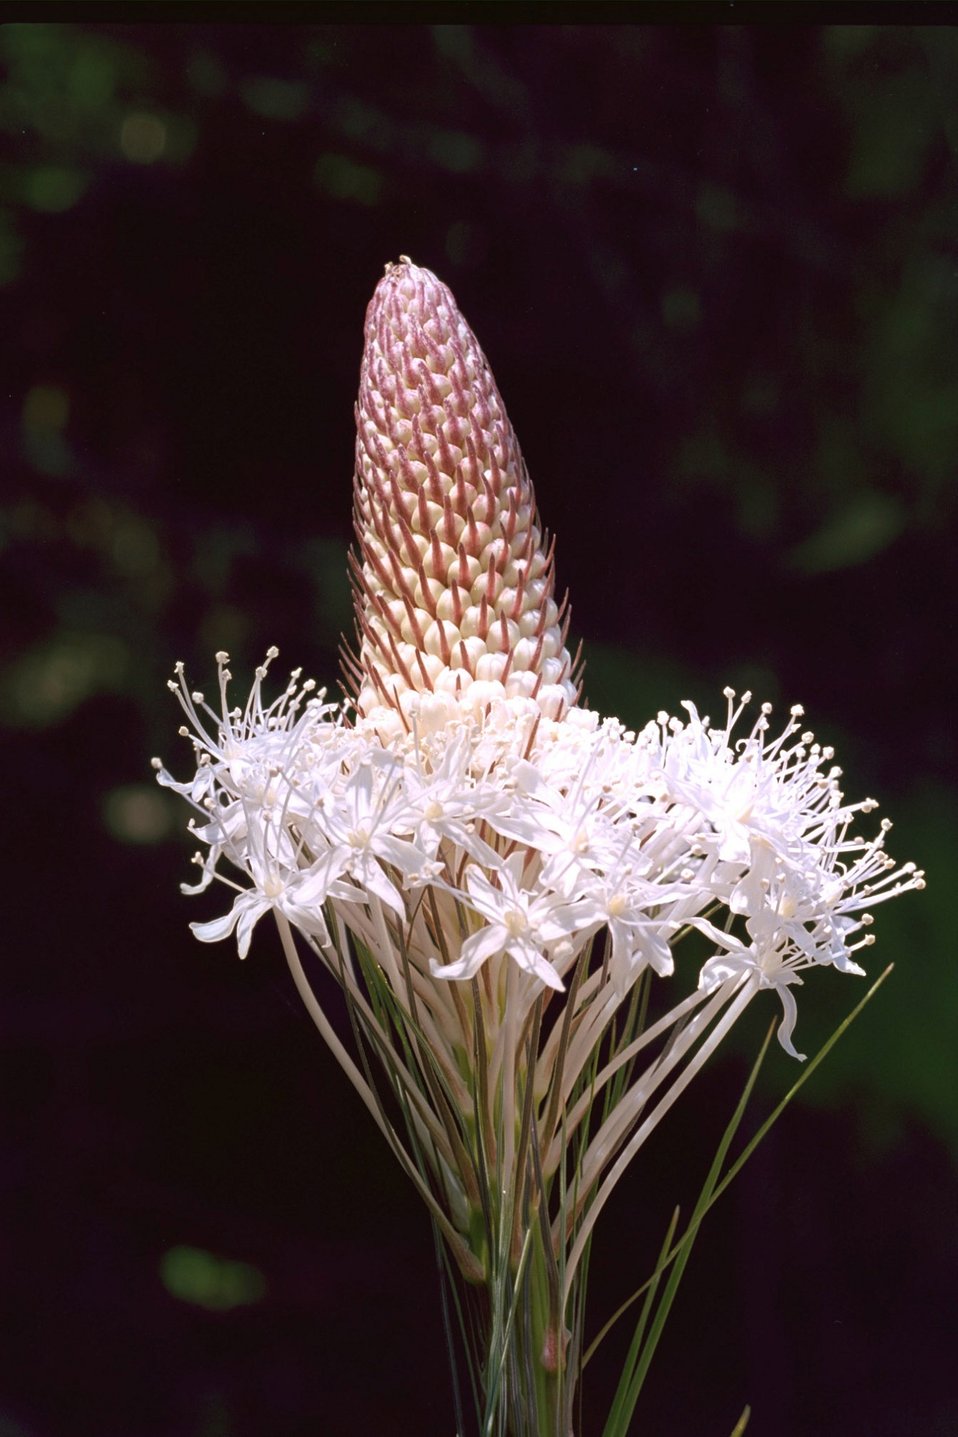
Bear Grass blossom (Xerophyllum tenax) along Grave Creek.